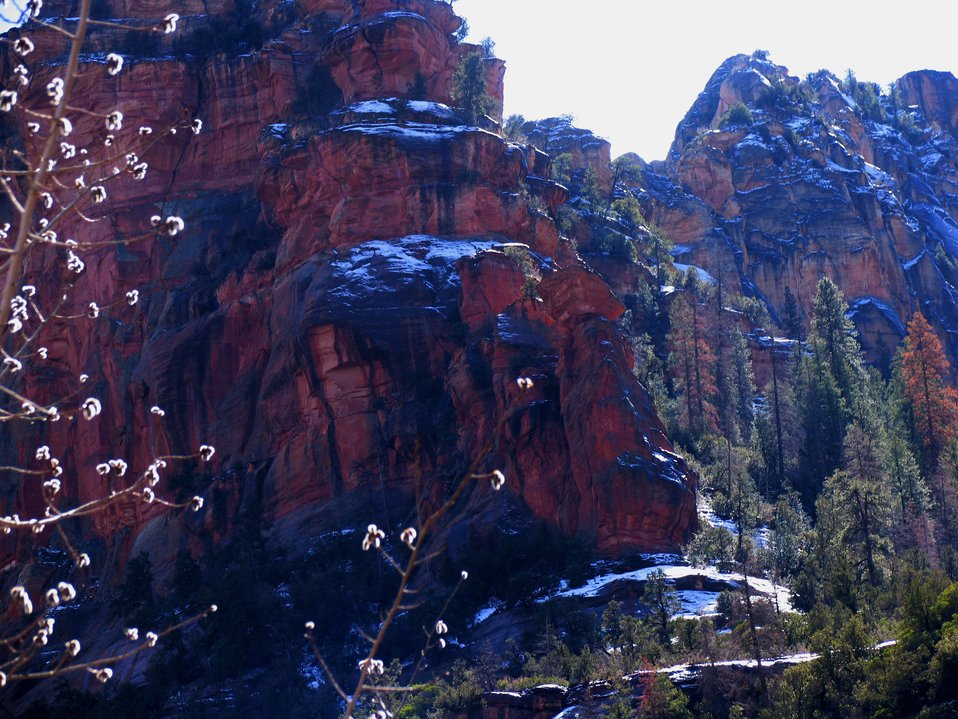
Desert colors of red and yellow sandstone, pines, and snow in Oak Creek Canyon.